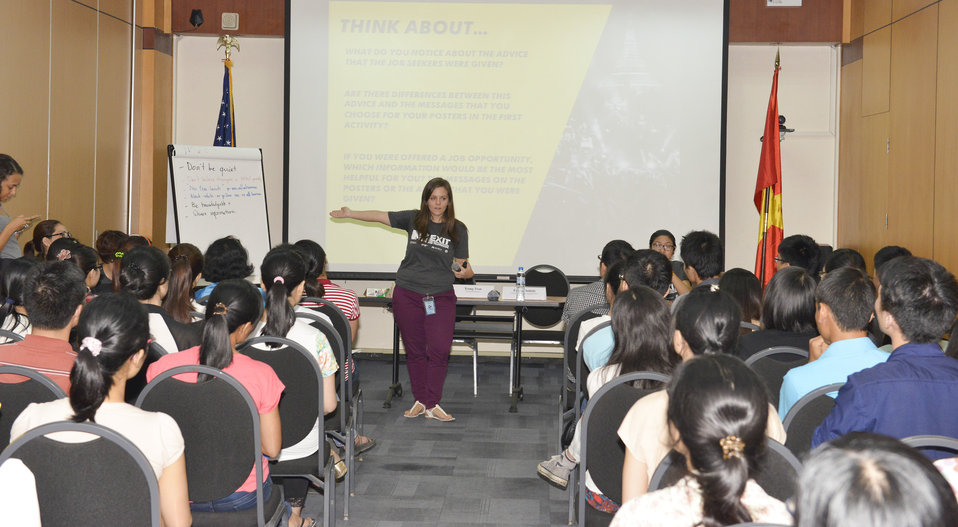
MTV Exit Talk to Engage Students in the Fight against Human Trafficking

Hanoi. June 5, 2014.